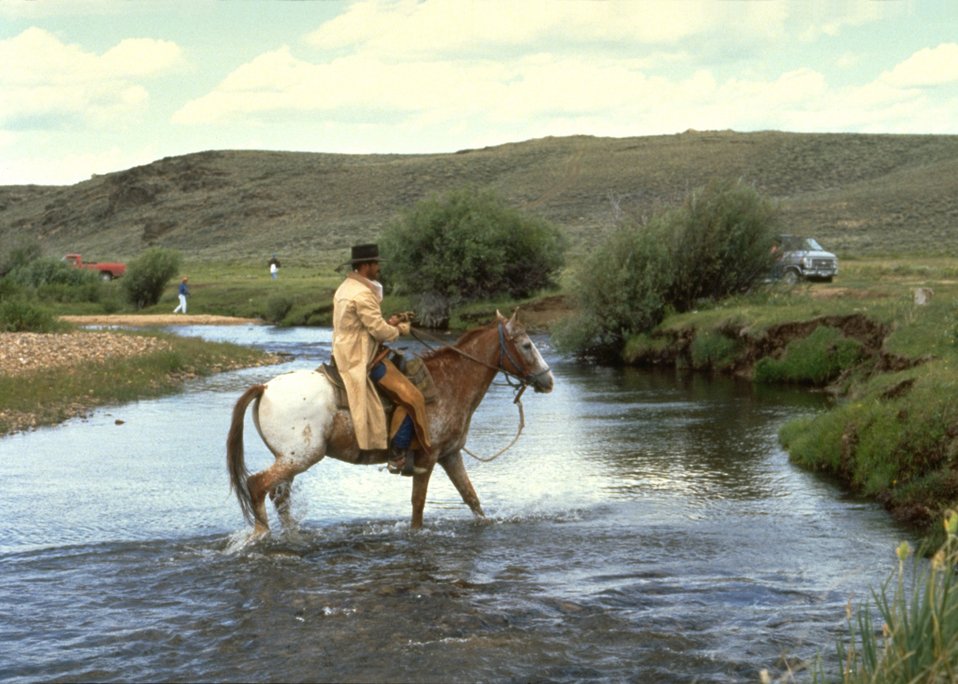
Horseback rider crossing a river.